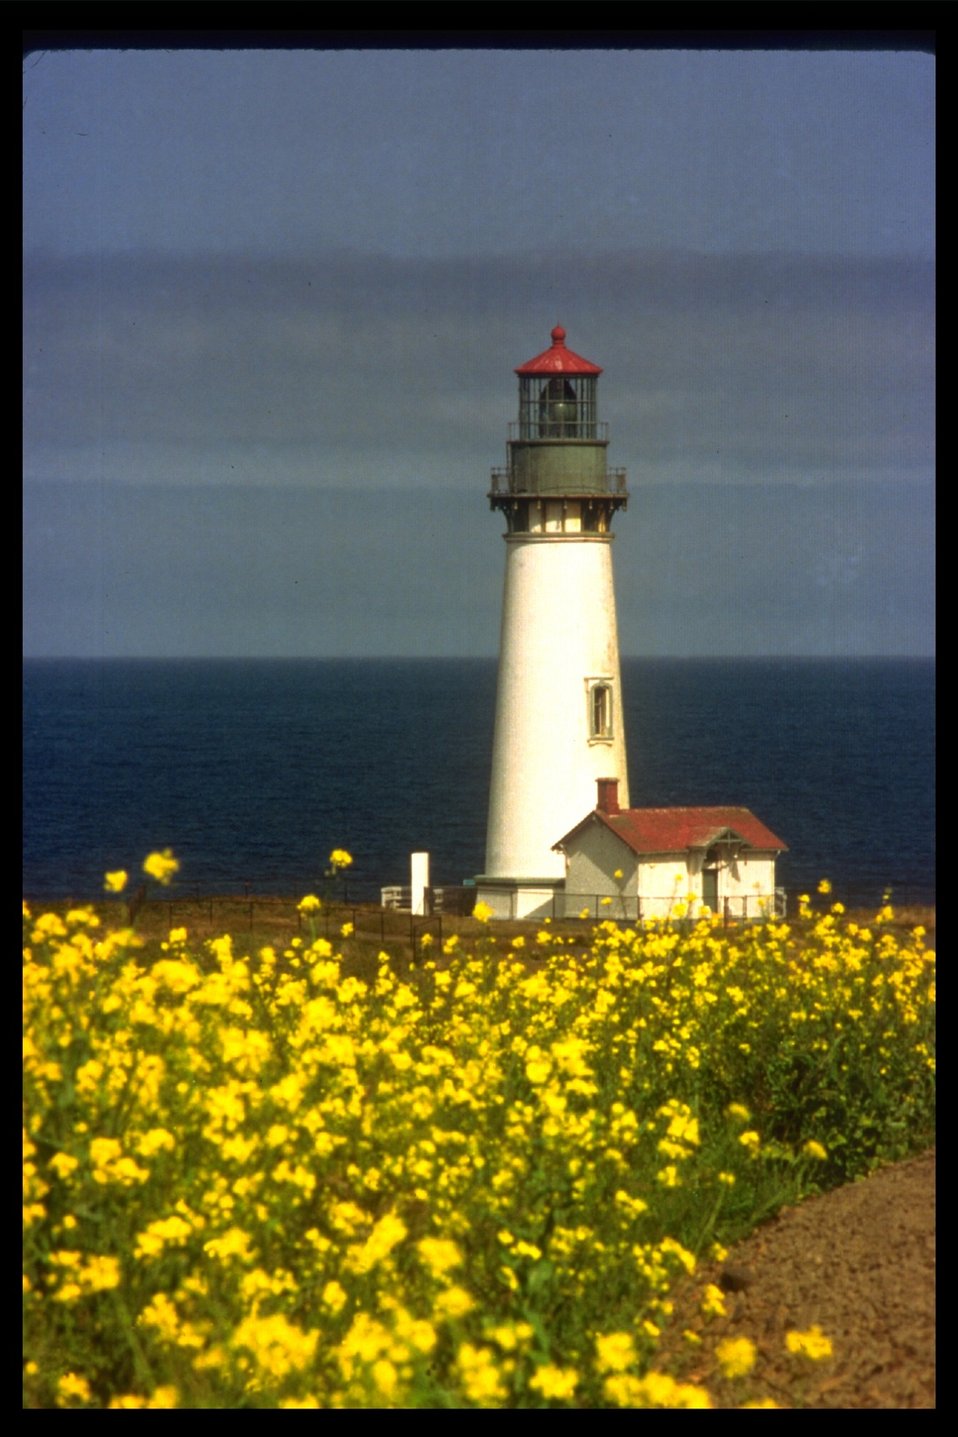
Mustard field near Yaquina Head Lighthouse.